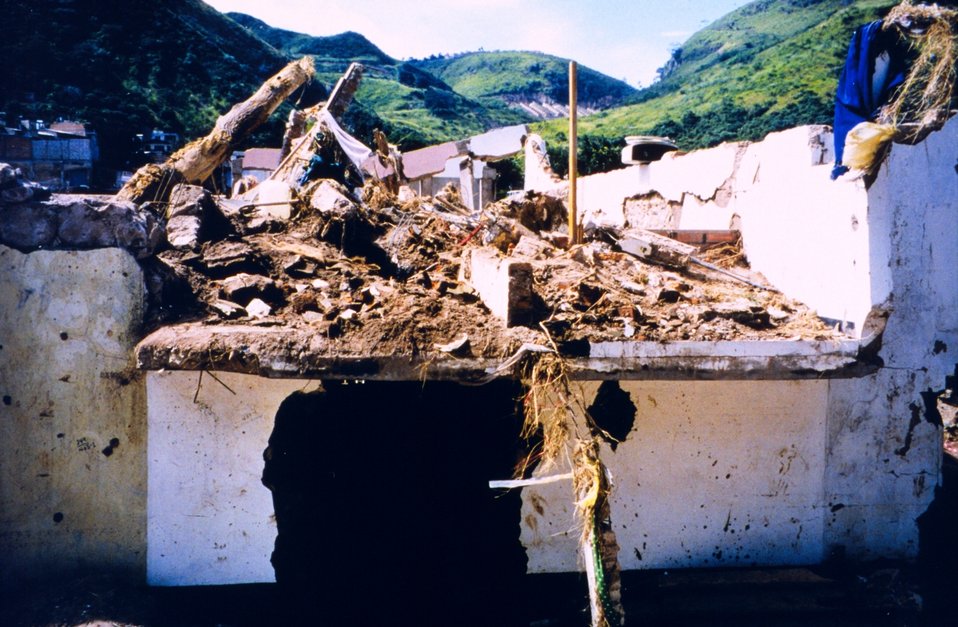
Flood damage along the Choluteca River caused by Hurricane Mitch. Over 9,000 deaths and 9,000 missing were attributed to Mitch making it the second most deadly hurricane in history ranking only below a 1780 hurricane in the Lesser Antilles.